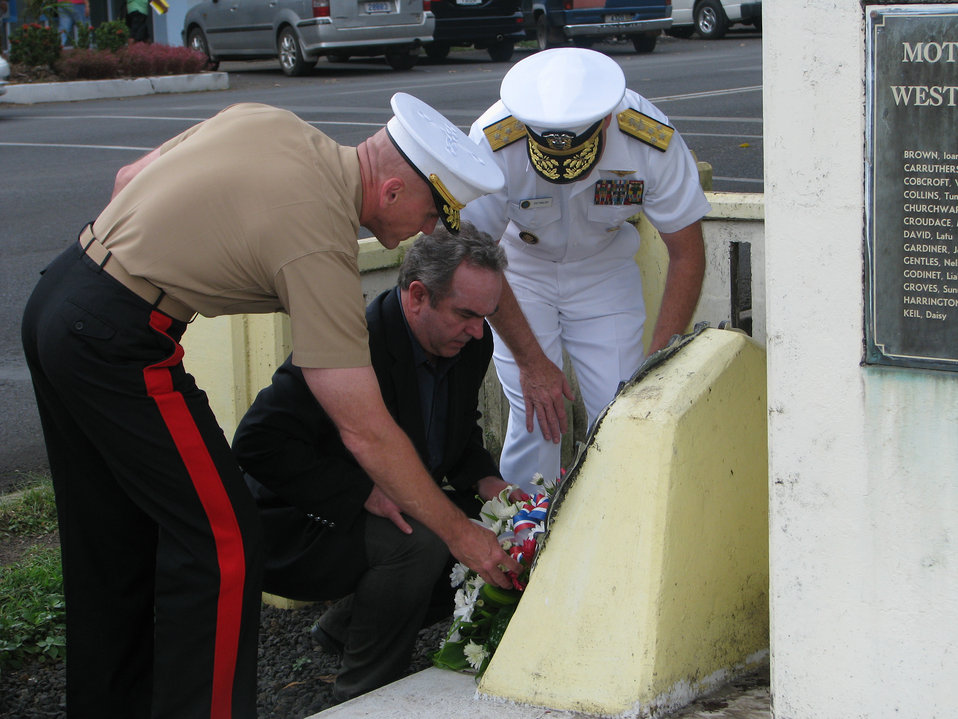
Assistant Secretary Campbell, Adm. Walsh, and Brig. Gen. Simcock Lay a Wreath at the WWI and WWII Memorial

Assistant Secretary for East Asian and Pacific Affairs Kurt Campbell, center, Adm. Patrick Walsh, commander of U.S. Pacific Fleet, right, and Office of the Secretary of Defense South/Southeast Asia Principal Director Brig. Gen. Richard Simcock, left, lay a wreath at the World War I and World War II Memorial during their visit to Apia, Samoa, on June 27, 2011. Assistant Secretary Campbell is leading a U.S. delegation, which includes, Walsh, Simcock, and U.S. Agency for International Development (USAID) Assistant Administrator Nisha Biswal, on a visit to nations throughout the South Pacific to engage in discussions to enhance bilateral political, economic, and security relations in the region.